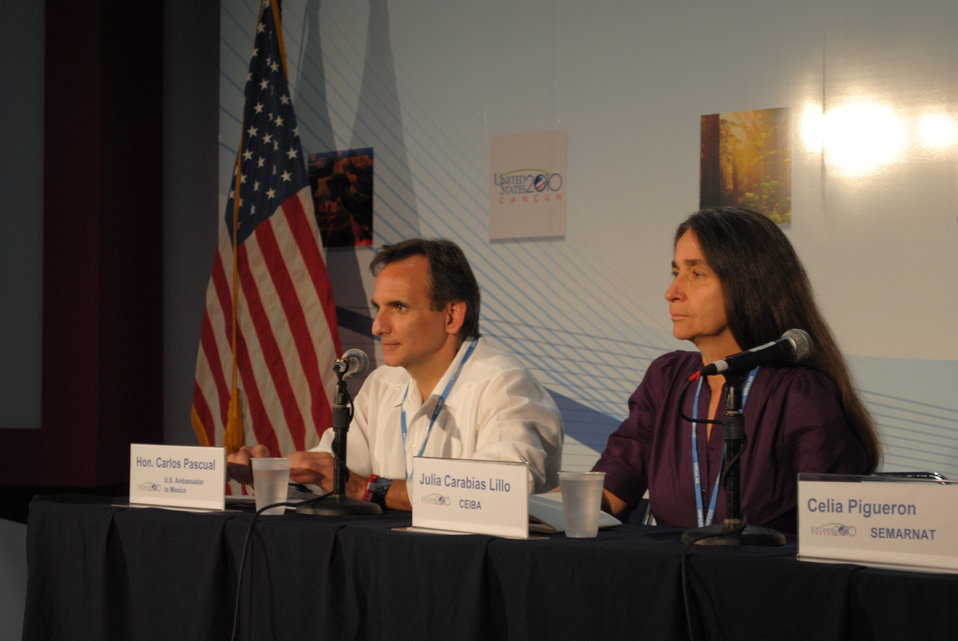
Ambassador Pasucal and Julia Carabias Lillo Listen to a Question

U.S. Ambassador to Mexico Carlos Pascual and CEIBA's Julia Carabias Lillo listen to a question from the audience at the U.S. Center at COP-16 in Cancun, Mexico, on December 8, 2010.